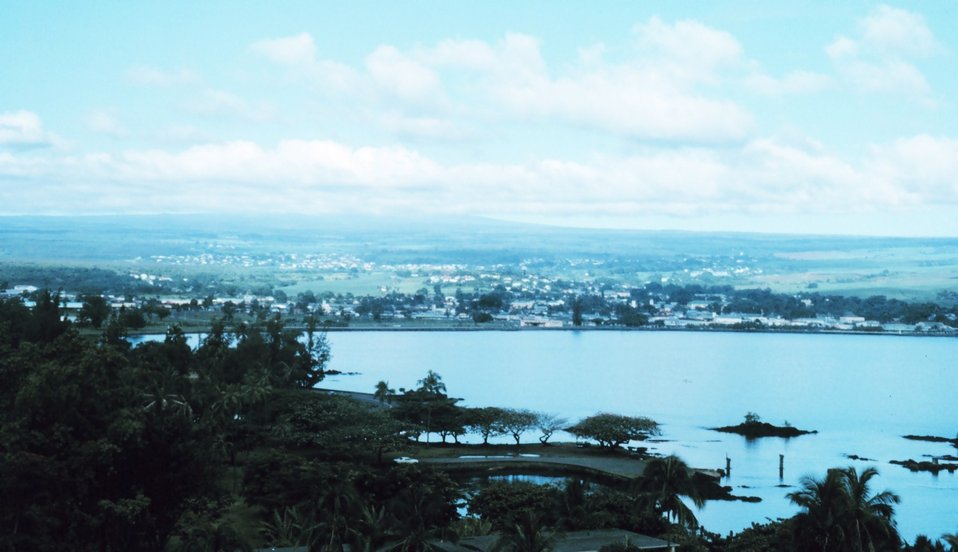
Hilo Bay